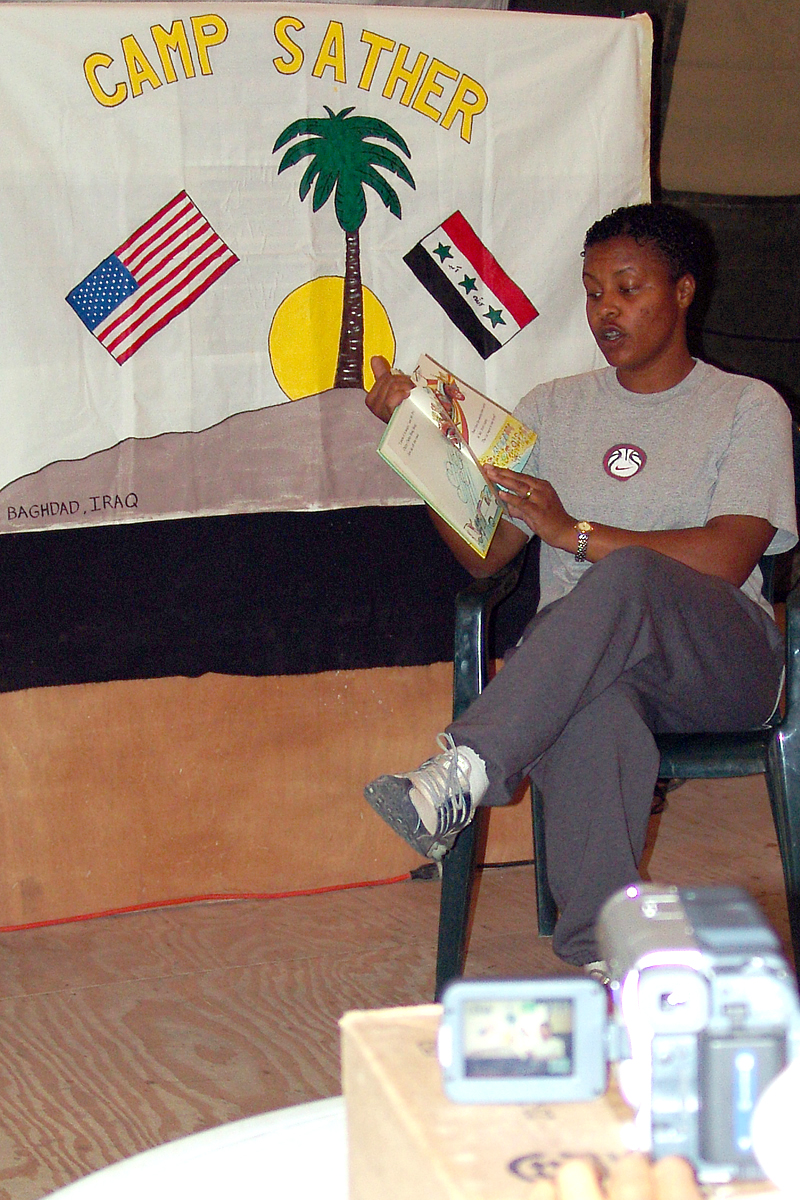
Airmen make storybook videos for children

BAGHDAD, Iraq -- Staff Sgt. Tanya Evans reads